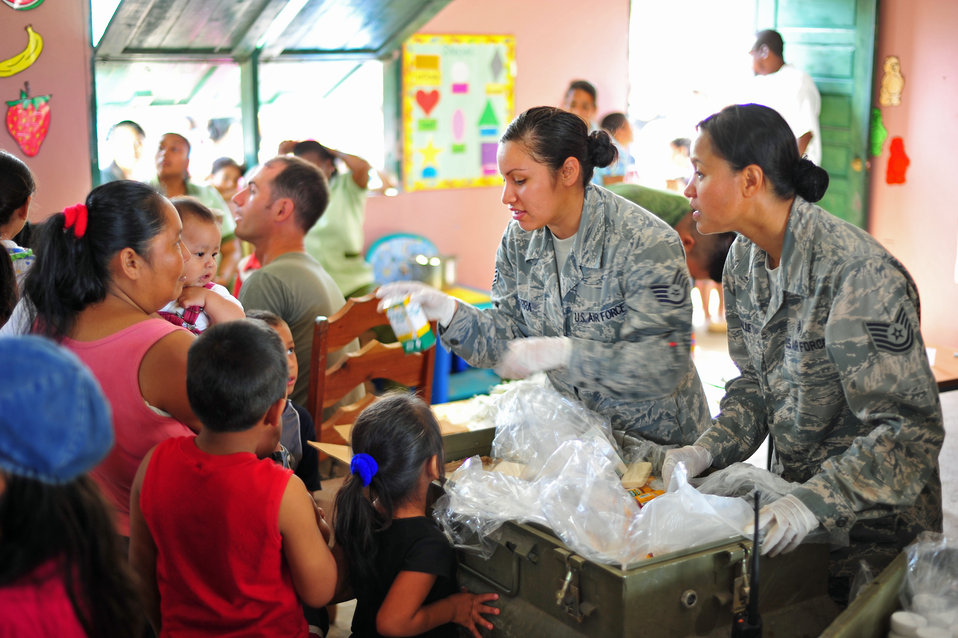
JTF-Bravo medics provide care in Belize

Tech. Sgt. Corazon Palle and Staff Sgt. Deanna Sierra, both medical technicians with the Joint Task Force-Bravo Medical Element, distribute vitamins, de-wormer and sanitation supplies to community members in Bella Vista, Belize, Feb. 28, 2012. Members from the Belize Ministry of Health, Belizean military and JTF-Bravo provided medical services to approximately 620 people in the area. JTF-Bravo is out Soto Cano Air Base, Honduras.